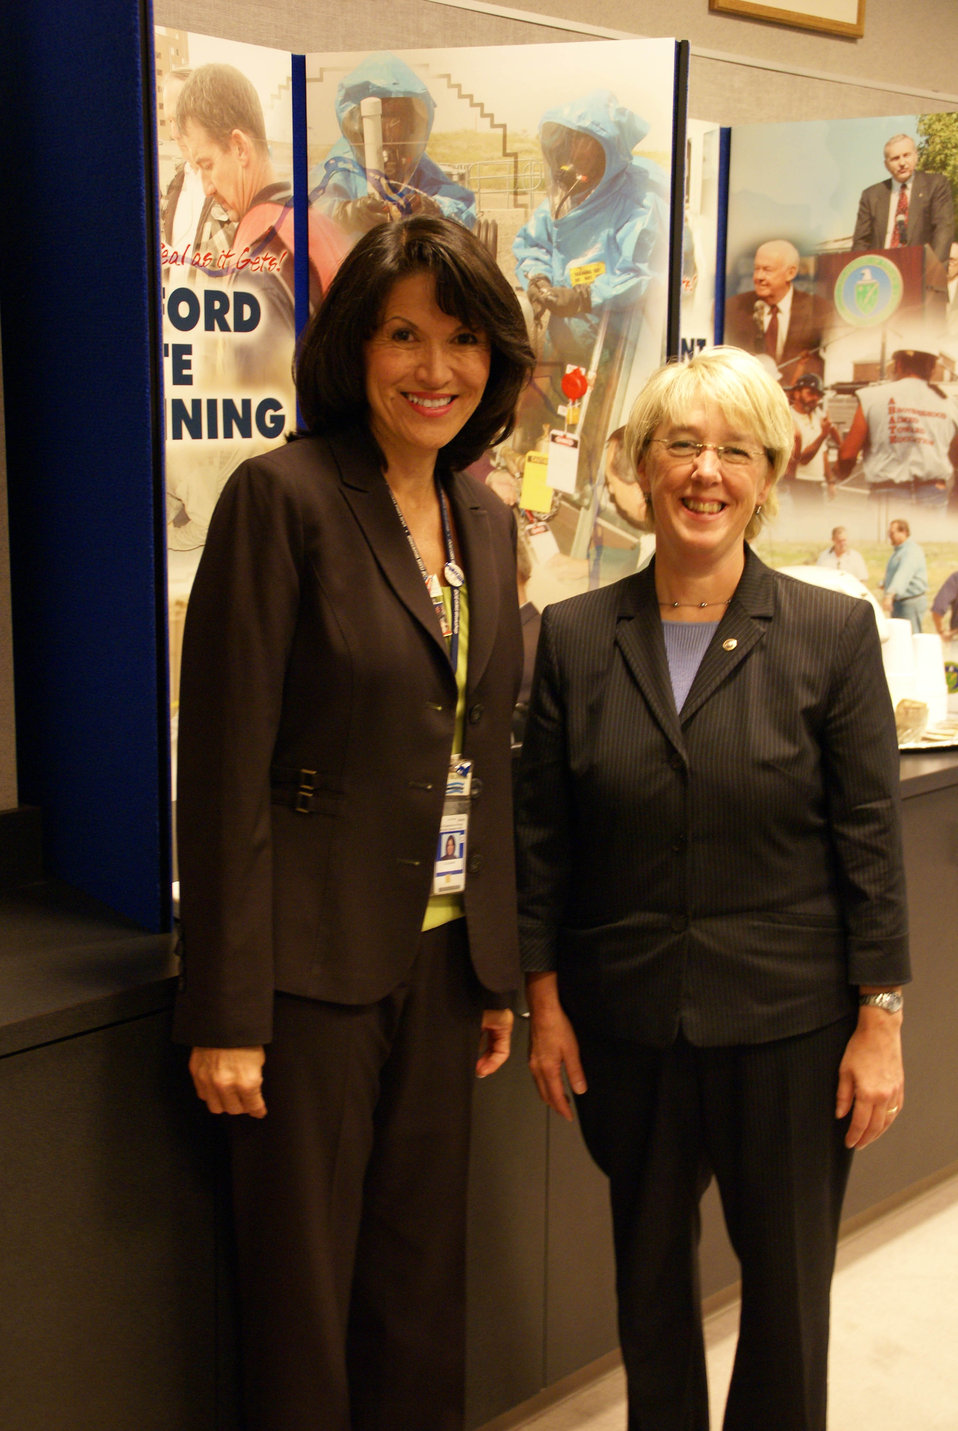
Former DOE ORP Manager Shirley Olinger with WA Senator Patty Murry 2008